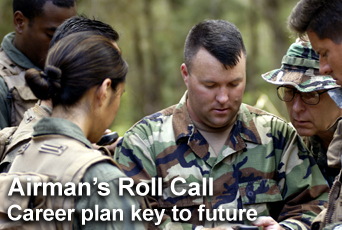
Airman's Roll Call highlights new enlisted career tool

This week's Airman's Roll Call focuses on a planning tool Airmen can use to take control of their Air Force careers.